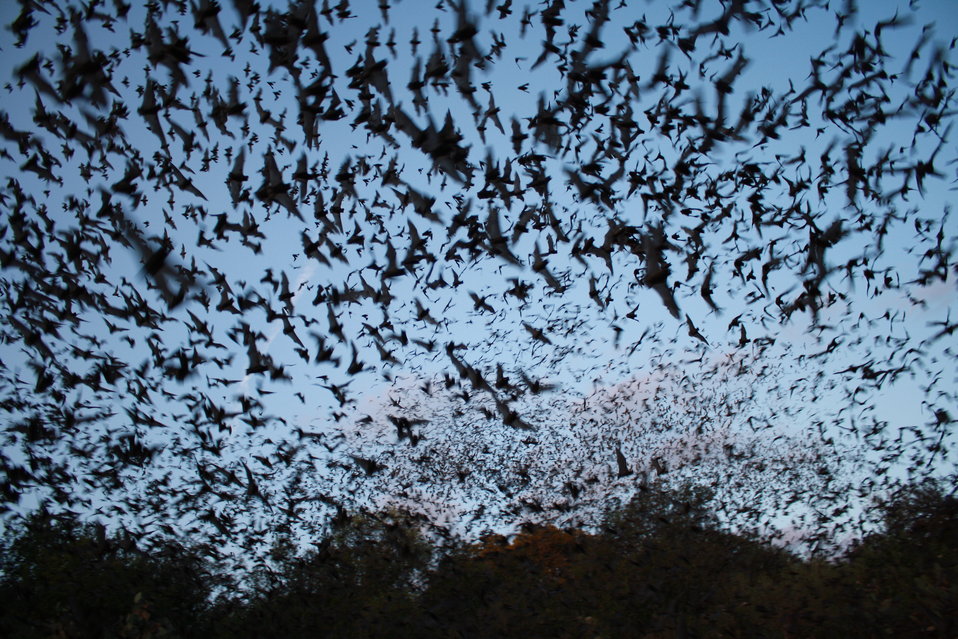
Mexican free-tailed bats exiting Bracken Bat Cave